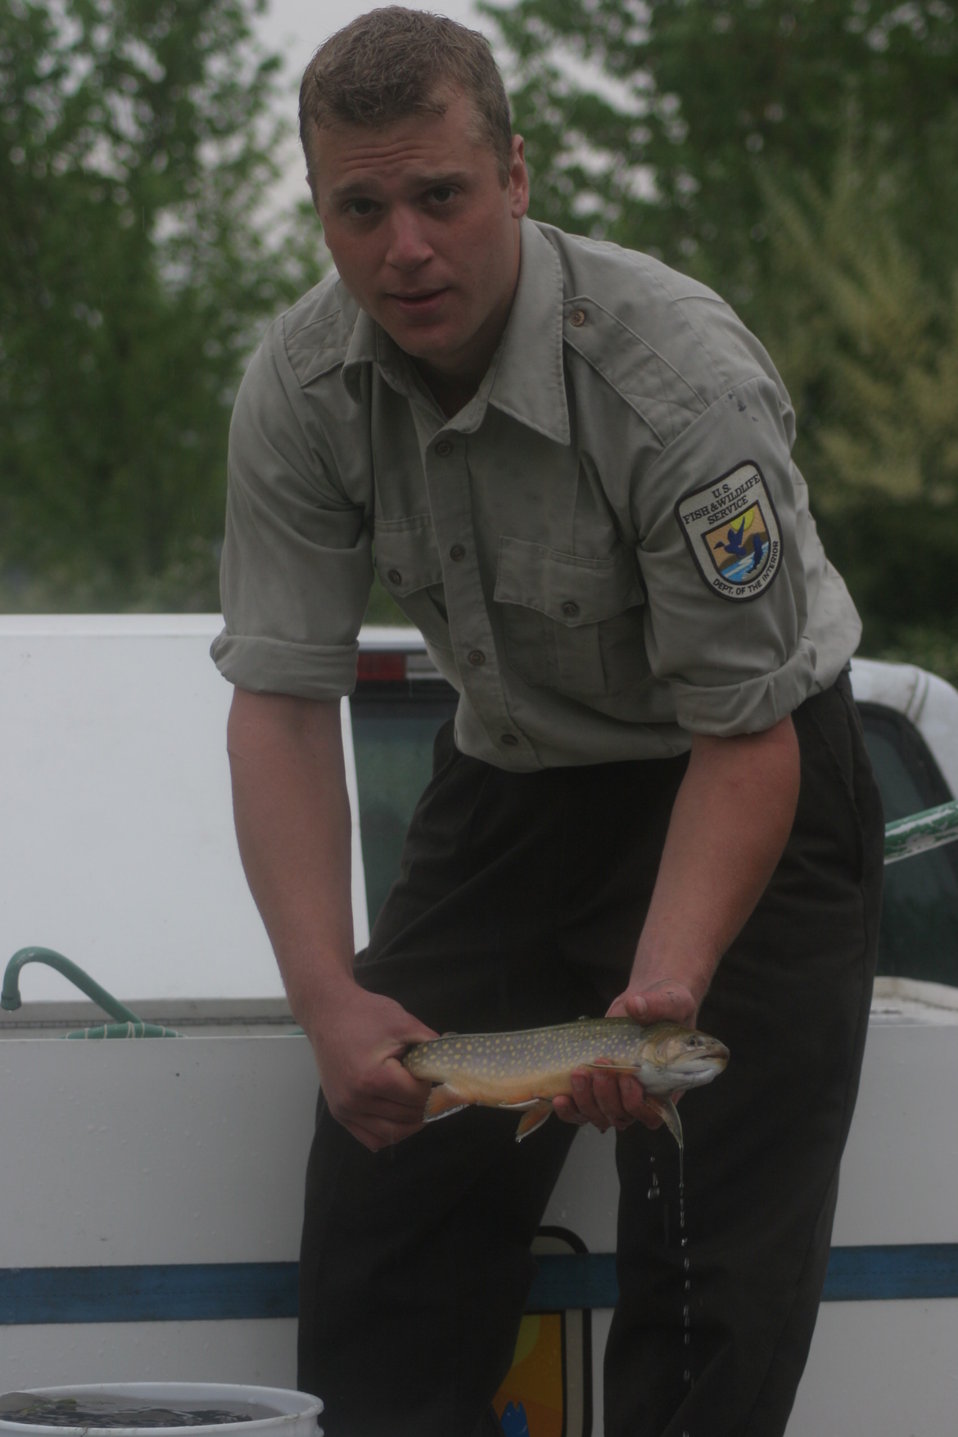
Brook trout

Fishing event at U.S. Fish and Wildlife Service Regional Office in Hadley, MA